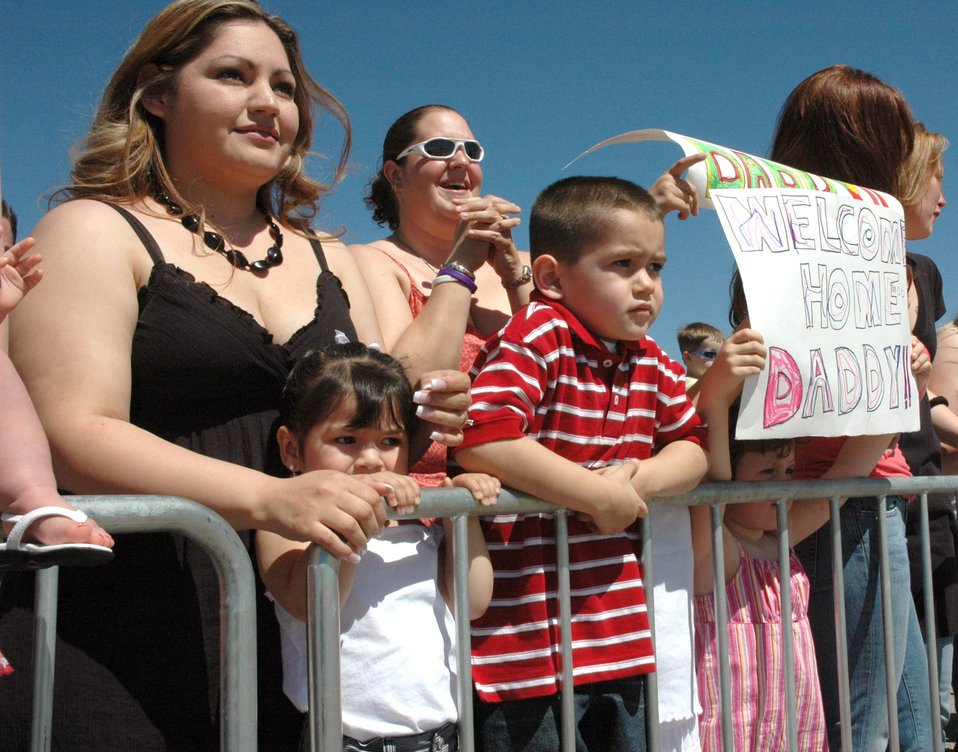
Airmen welcomed home at Mountain Home

Families members await the return of 35 Airmen May 8 from the 366th Civil Engineer Squadron at Mountain Home Air Force Base, Idaho. The base welcomed home the squadron members who served at forward operating locations in Iraq and Afghanistan over the past seven months to build new work centers and living quarters to accommodate additional forces arriving in the region as part of the military's ongoing troop surge.